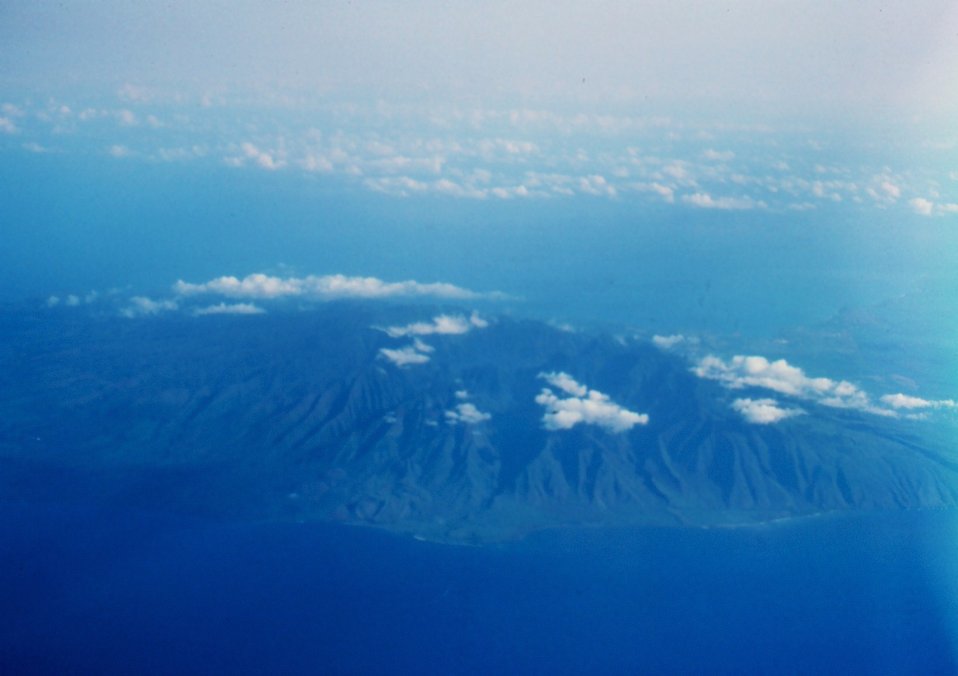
Kauai from the air.